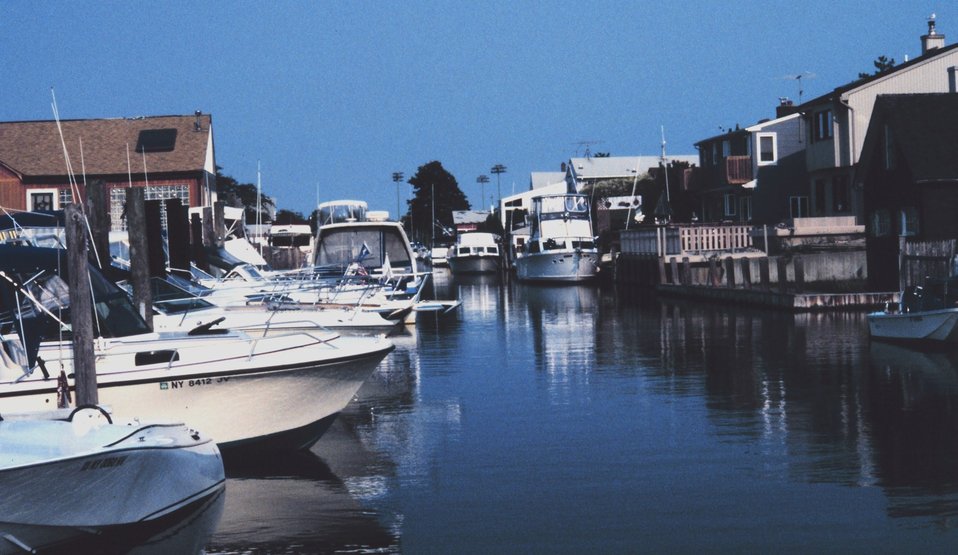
Backyard boat slips along Ocean Avenue